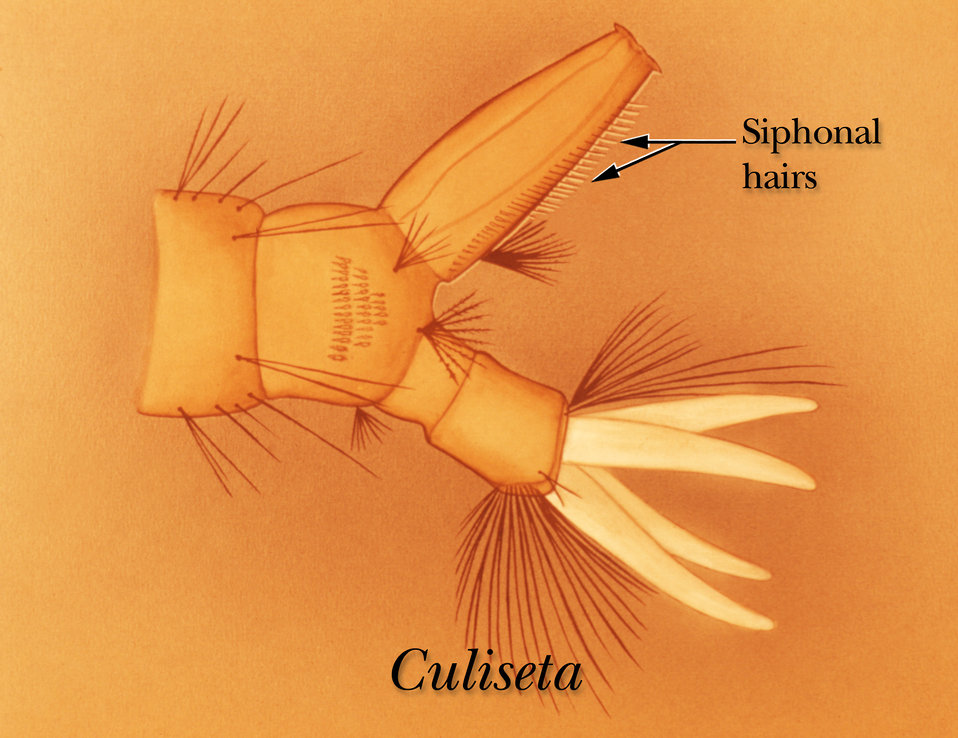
An illustration identifying the siphonal hairs on the terminal segment of a Culiseta mosquito larva.